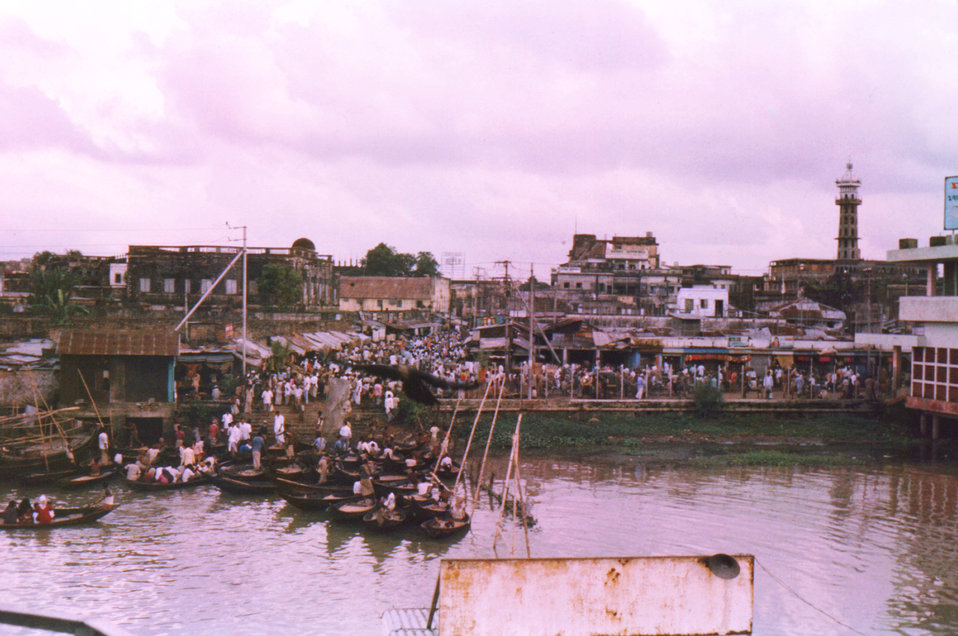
This was the view from onboard 'The Rocket', which was in the process of transporting travelers leaving Dhaka, Bangladesh, and taking them to Barisal. The Rocket was built in 1924.